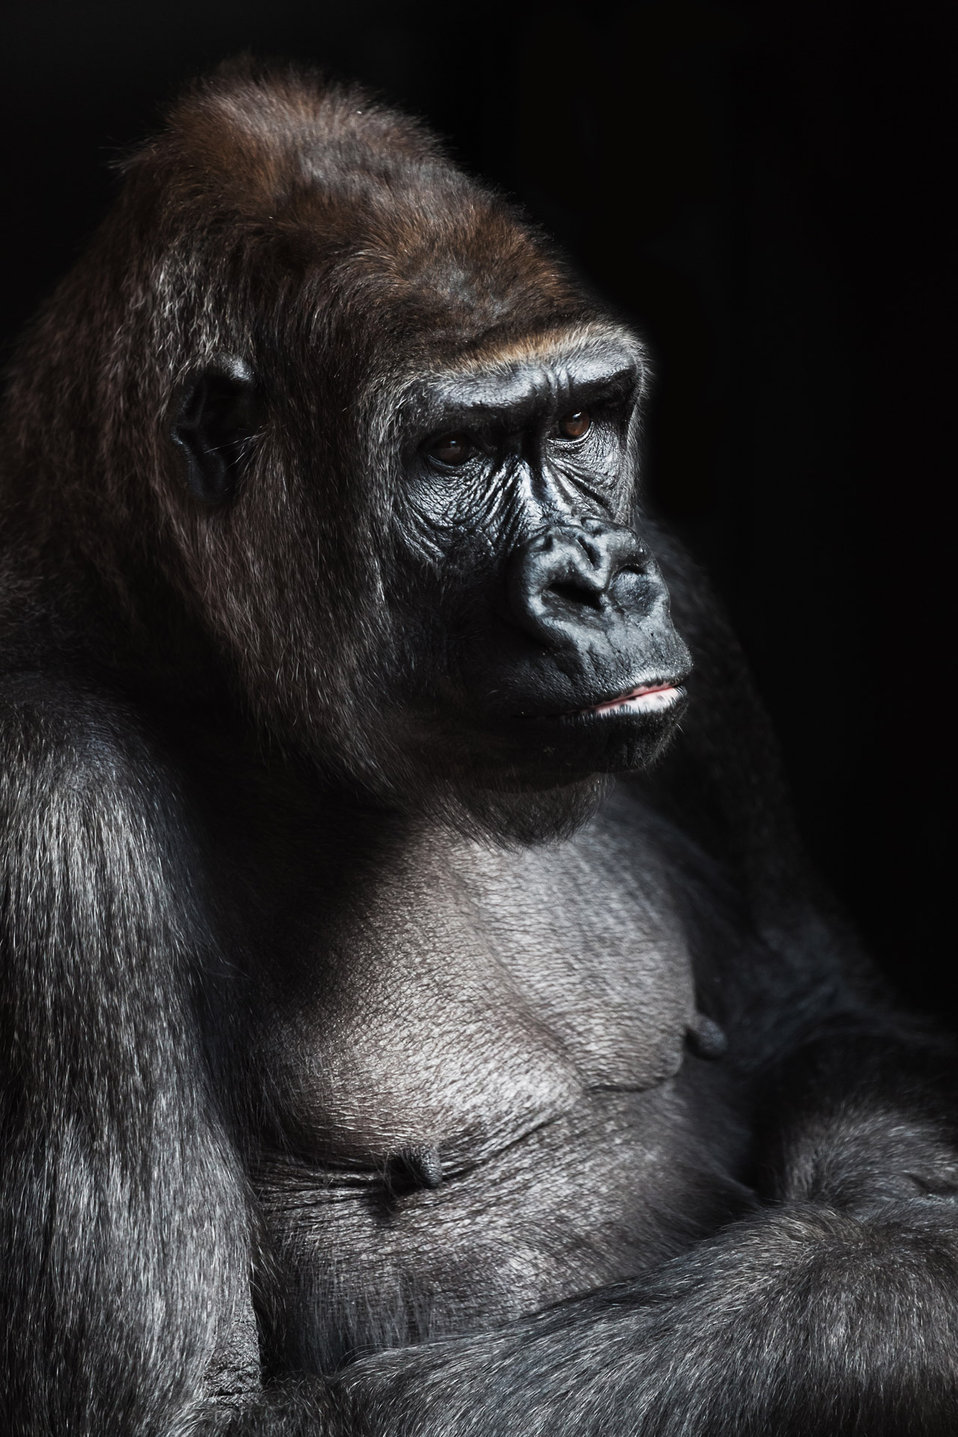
Gorilla

Portrait of a gorilla on dark background.